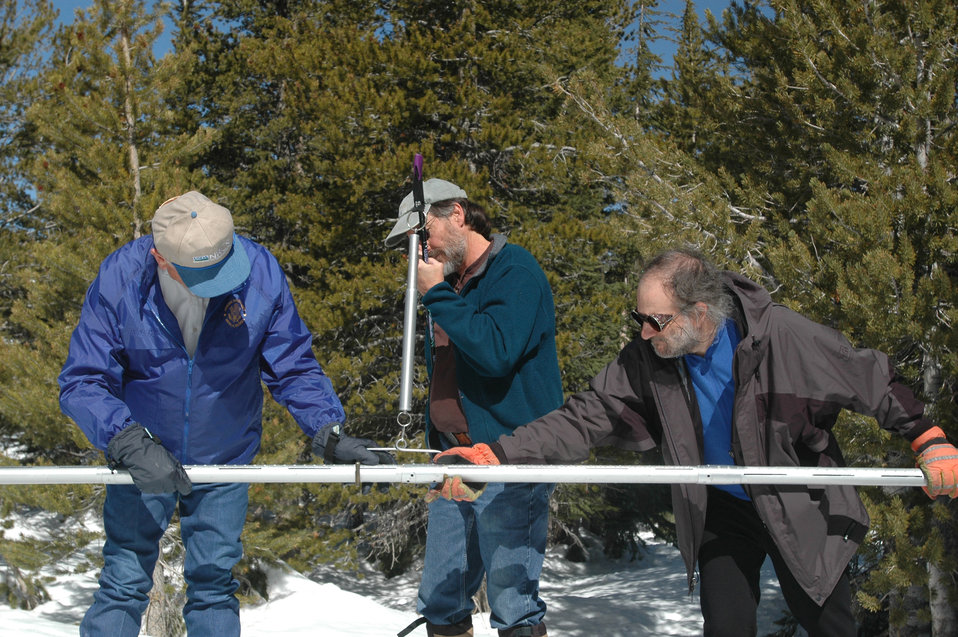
Scientists from the Federal, State, and private cooperative snow survey program directed by the U.S. Department of Agriculture's (USDA) Natural Resources Conservation Service (NRCS) sample the snow pack in Nevada on May 2, 2006. Snow plays a vital role in the lives of the citizens who live in the Western U.S. as a primary source of the water supply. The West's high mountain ranges hold a vast snowpack that provides 50 to 80 percent of the year's water supply and nature cannot be relied upon to provide an uninterrupted, dependable supply of meltwater to meet all the downstream requirements. The successful management of the West’s water supply begins with knowledge of the primary source of water in the West: snow.